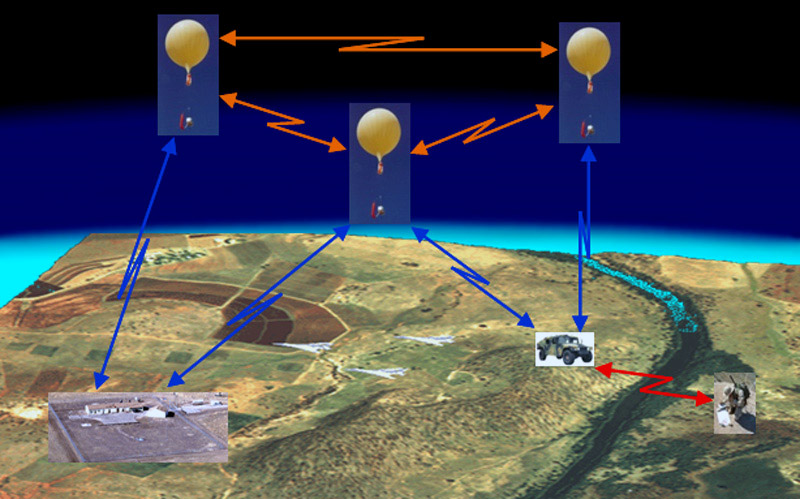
Combat Airborne Network

This illustration shows how the combat airborne network could improve communication and situational awareness between security forces on the ground and a missile alert facility by eliminating dead spots in the field and limiting signal degradation by establishing a wireless mesh network.